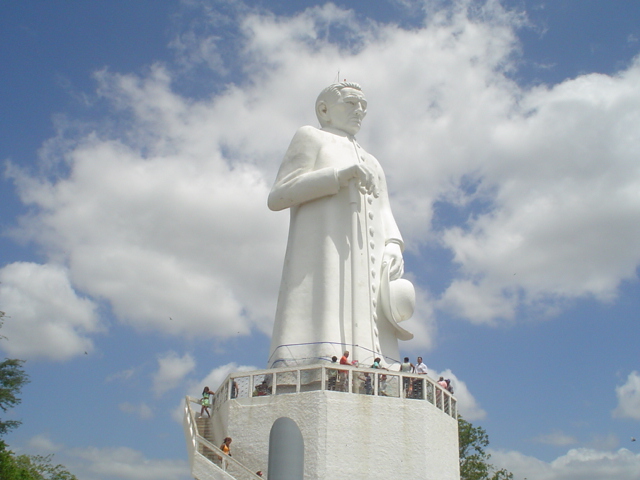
Foto tirada pelo autor em Juazeiro do Norte em Jan 2006